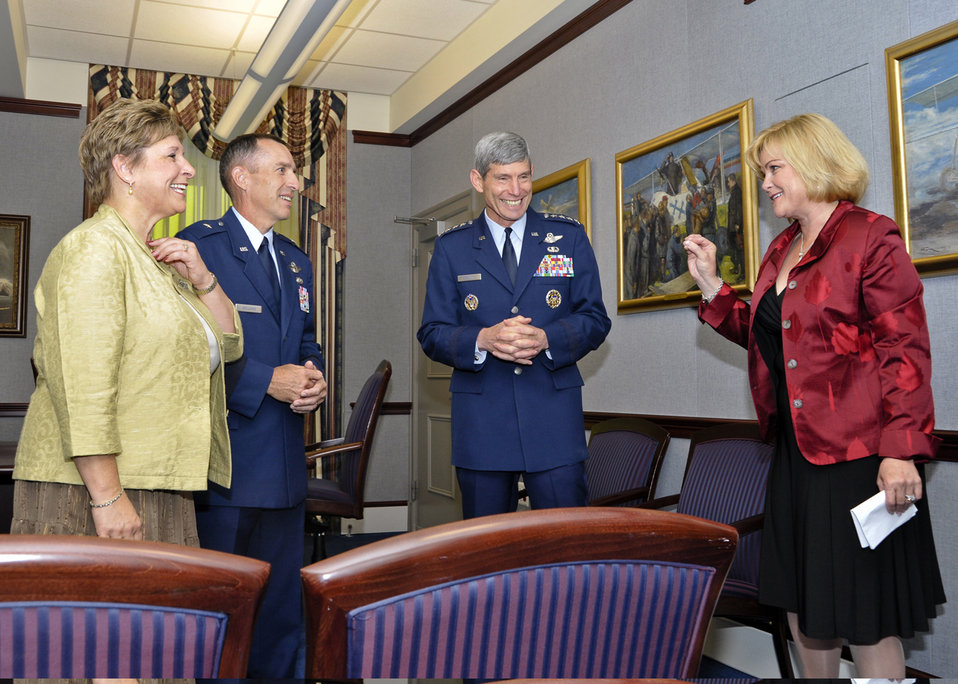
O'Malley Award

Sharon O'Malley Burg, daughter of the late Gen. Jerome and Diane O'Malley, makes a point during an informal conversation with Air Force Chief of Staff Gen. Norton Schwartz and Brig. Gen. Brett and Marianne Williams prior to the start of a ceremony at the Pentagon Sept. 11, 2009, honoring General and Mrs. Williams. They are the recipients of the 2009 General and Mrs. Jerome O'Malley Award. The award was established after the O'Malleys, who were known for their leadership and contributions to Air Force families and communities, were killed in a plane crash in 1985.